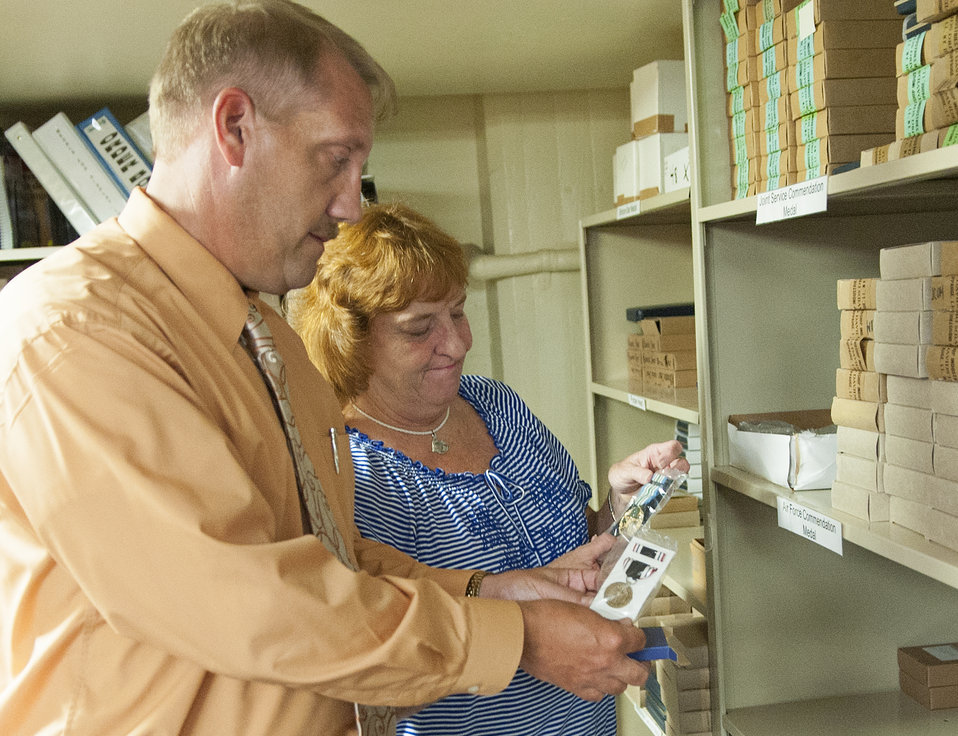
POW Medal awarded after 32-year wait

William Brown and Pam Garcia examine a POW Medal in its case before shipment to the recipient, at the Air Force Personnel Center, Joint Base San Antonio-Randolph, Texas, on Aug. 23, 2012. Brown is the chief of Air Force Evaluation and Recognition Programs branch and Garcia is a contractor with Goodwill Industries.